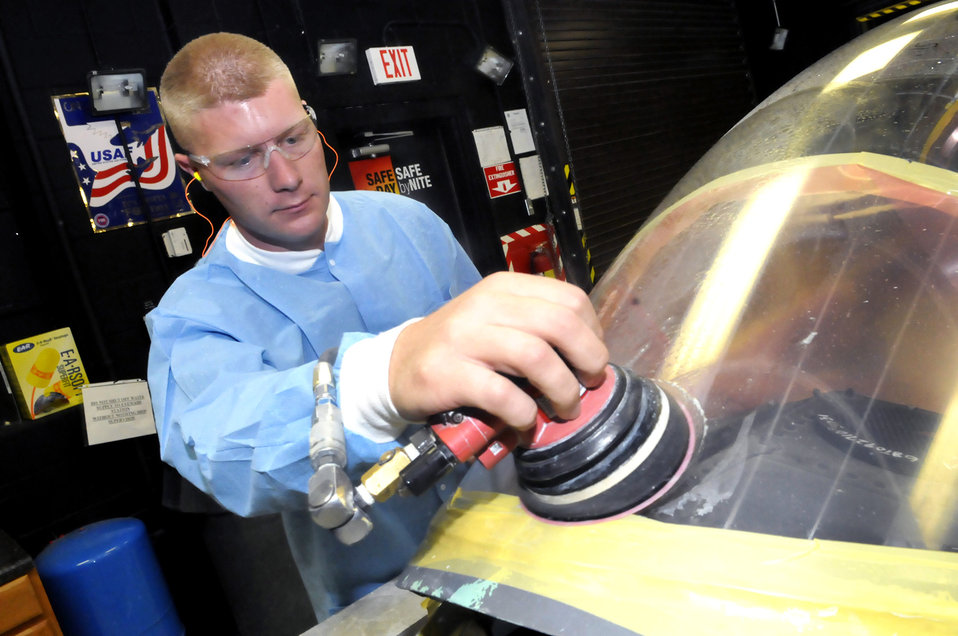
Robins maintainers give pilots unobstructed vision

Staff Sgt. Nicholas Hicks sands out pits on an F-15 Eagle canopy at Robins Air Force Base, Ga. SergeantHicks is an Oregon Air National Guard member.